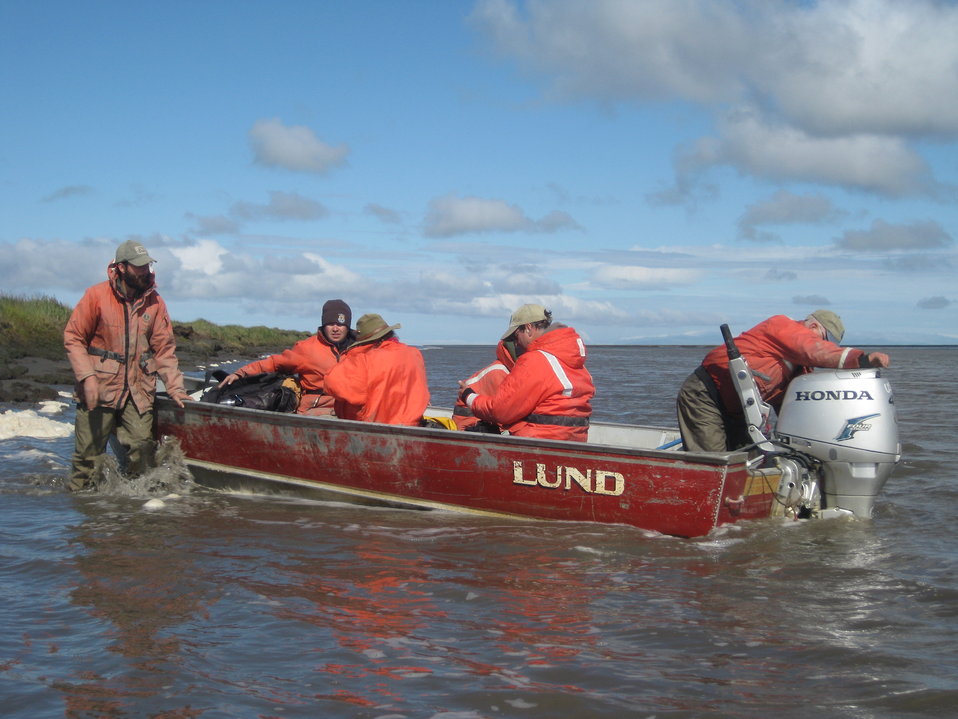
Boating

Boats are a major form of transportation for many of the projects on the Y-K Delta.

USFWS Yukon Delta NWR